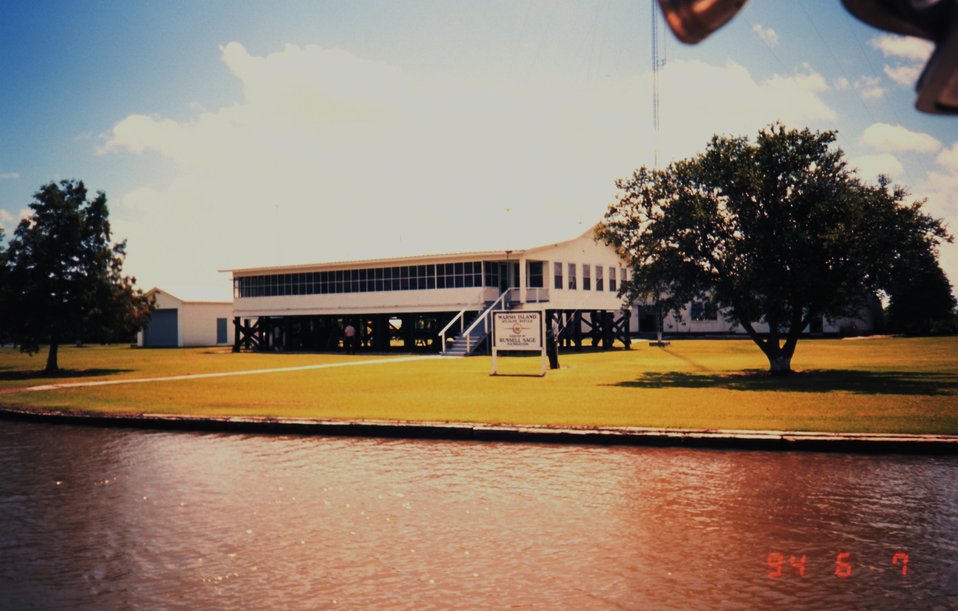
The Louisiana Fish and Wildlife station at Marsh Island. This is the headquarters for the Marsh Island Refuge.